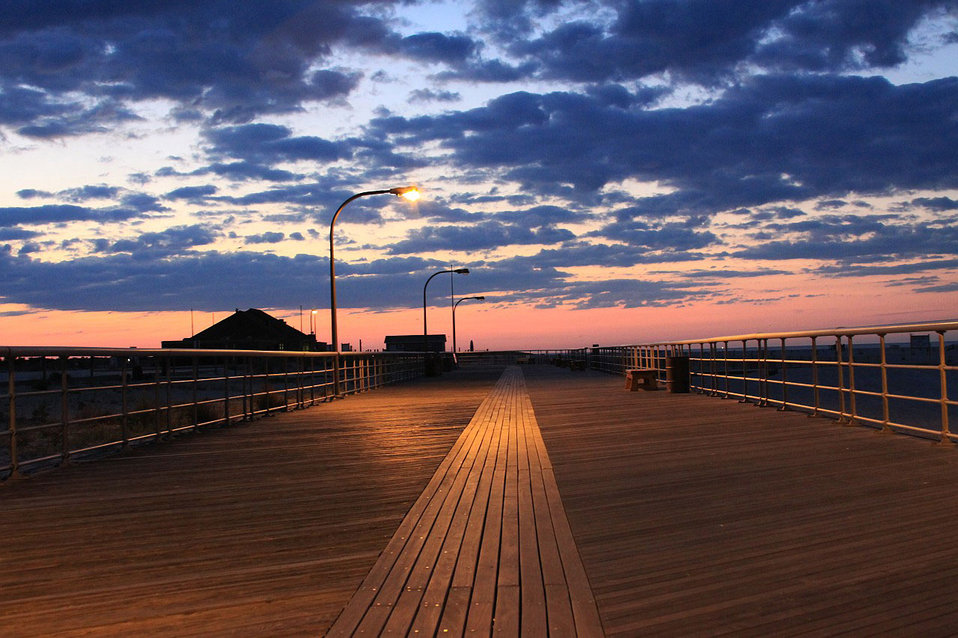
Before sunrise

Empty boardwalk along the beach right before sunrise.